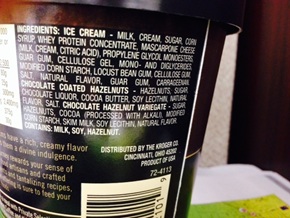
RECALLED - Chocolate Hazelnut Mascarpone Ice cream and Caramel Hazelnut Fudge Truffle Ice cream

April 26, 2014 – Product Recall – Two Private Selection Ice Cream Flavors Recalled for Undeclared Allergen.